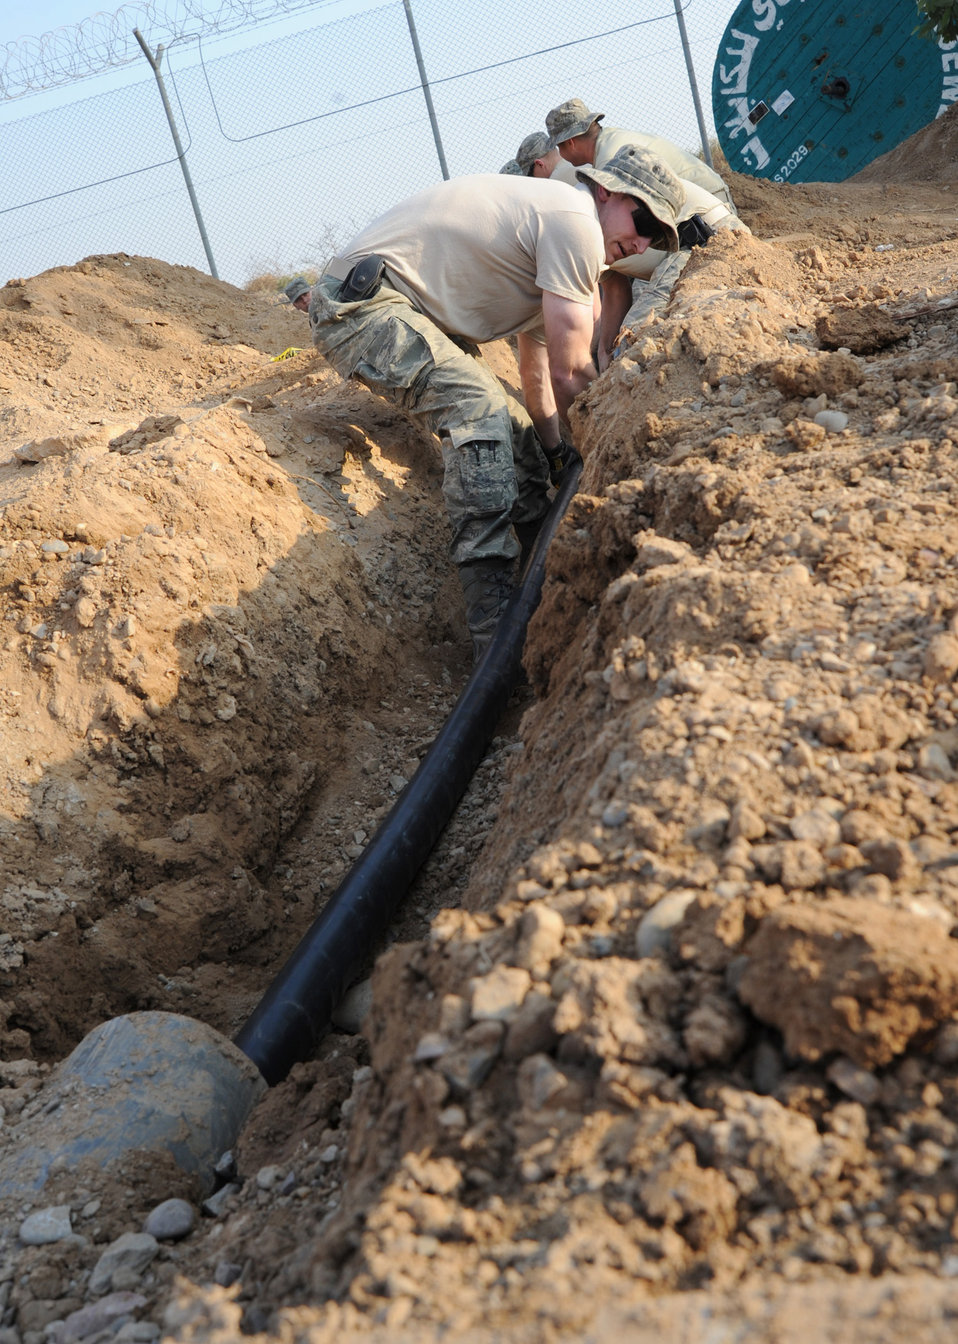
We've got the power

Senior Airman Curtis Raymond lays high-voltage power cable Jan. 6, 2011, at Joint Base Balad, Iraq. The cable will provide electricity for local villagers who were without power for more than 85 days. Airman Raymond is a structural journeyman with the 332nd Expeditionary Civil Engineer Squadron.